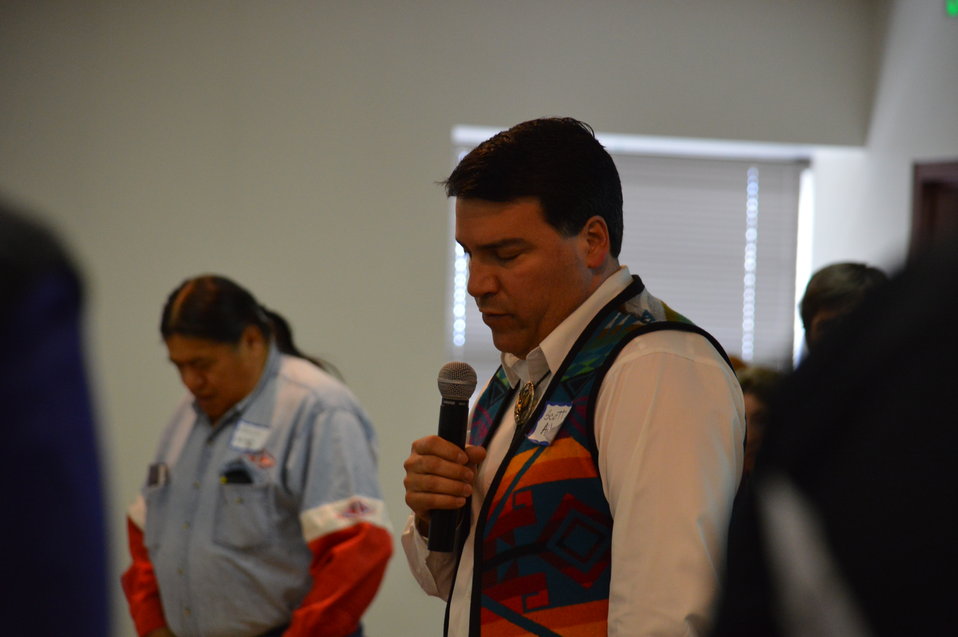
Eagle Summit III - Prayer

Scott Aiken (National Tribial Liaison) says a prayer before lunch at the Eagle Summit III in Denver, Colorado on March 20, 2014 at the Rocky Mountain Arsenal National Wildlife Refuge.